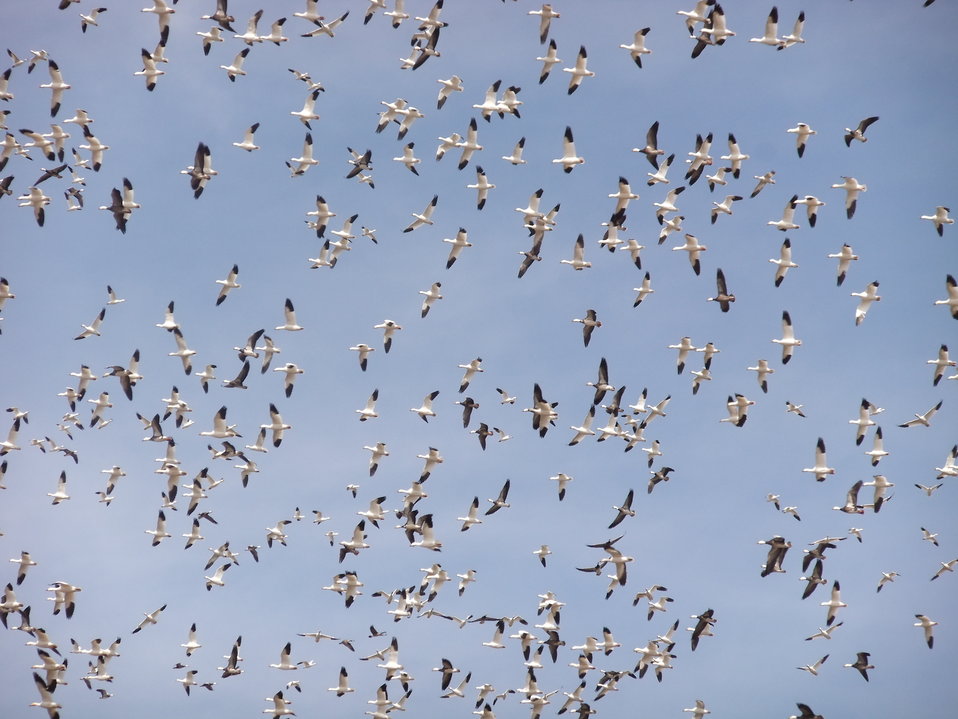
A Sky Filled with White

Snow Geese fill the sky, looking for a place to land.

Location: Just outside Grand Island, NE

Credit: Amanda Horvath / USFWS

Photo Contest Entry #128